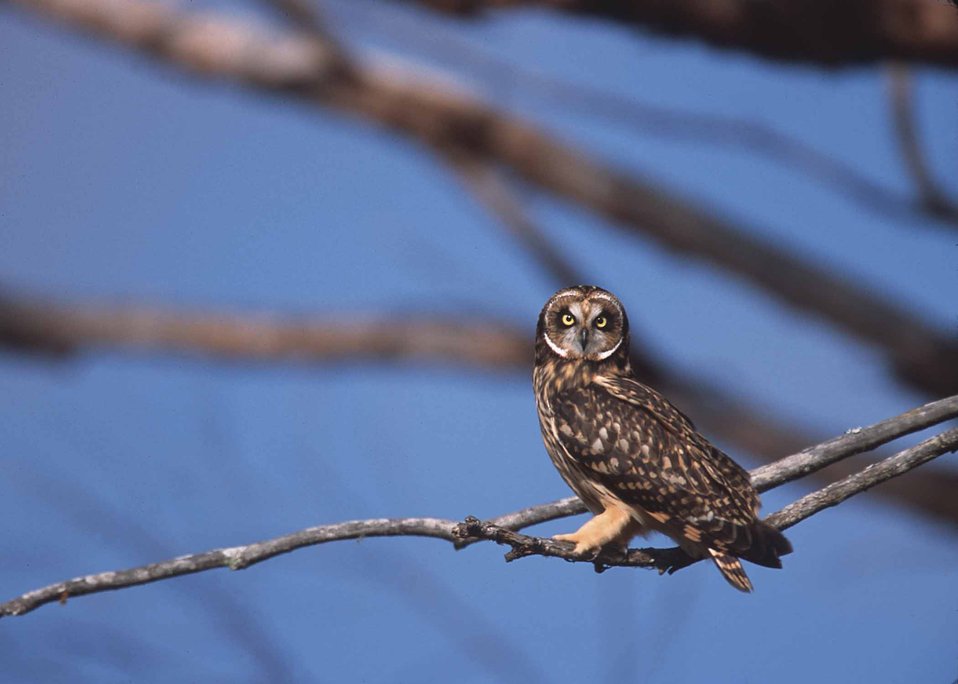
The short eared owl in Hawaii.